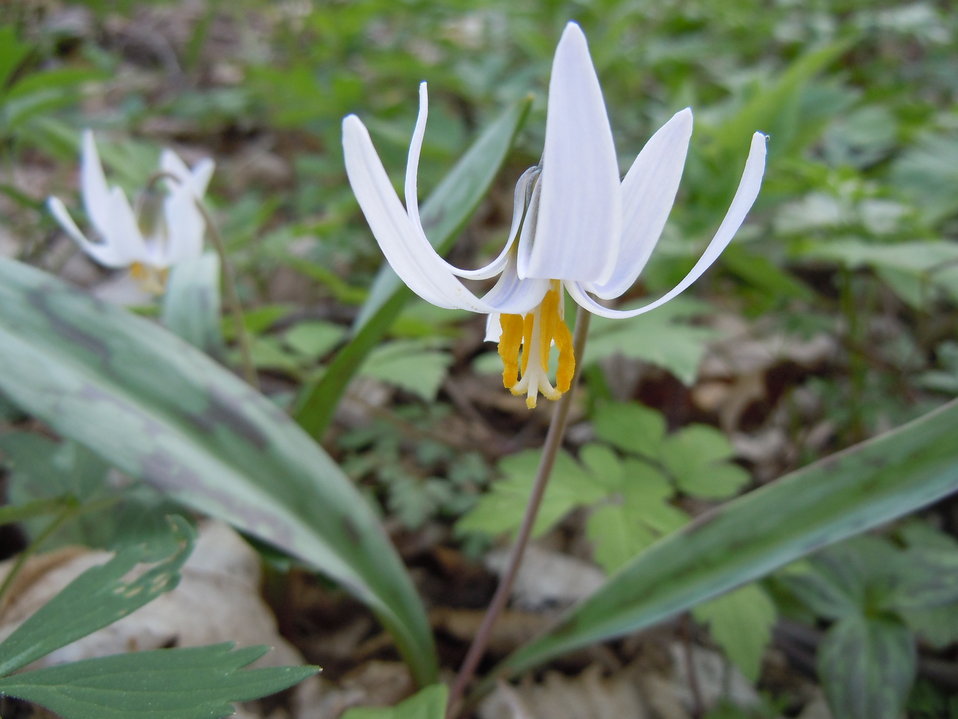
White Trout Lily